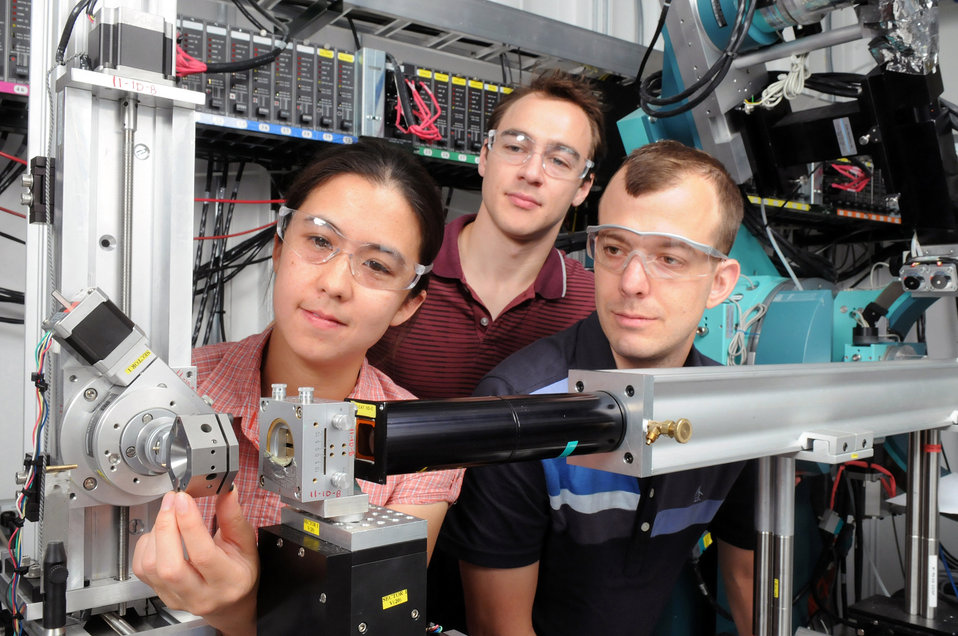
Argonne scientists examined the properties of metal-organic framework to better understand how they may work in applications outside the laboratory.

Argonne National Laboratory scientists are putting pressure on metal-organic frameworks (MOF), they act like molecular-scale sponges. These MOF's have wide ranging potential uses for filtering, capturing or detecting molecules such as carbon dioxide or hydrogen storage for fuel cells. Since the MOF's do not fill space efficiently, the structures are particularly sensitive to even relatively moderate applied pressures. For any carbon or hydrogen gas storage application, the MOF materials which generally form as fine particles or small crystals will need to be compressed into pellets to optimize their volume capacity. Using a diamond anvil cell at the lab's Advanced Photon Source synthesized a copper-benzenetricarboxylate MOF and subjected its framework to various pressure with and without pressure-transmitting fluids.